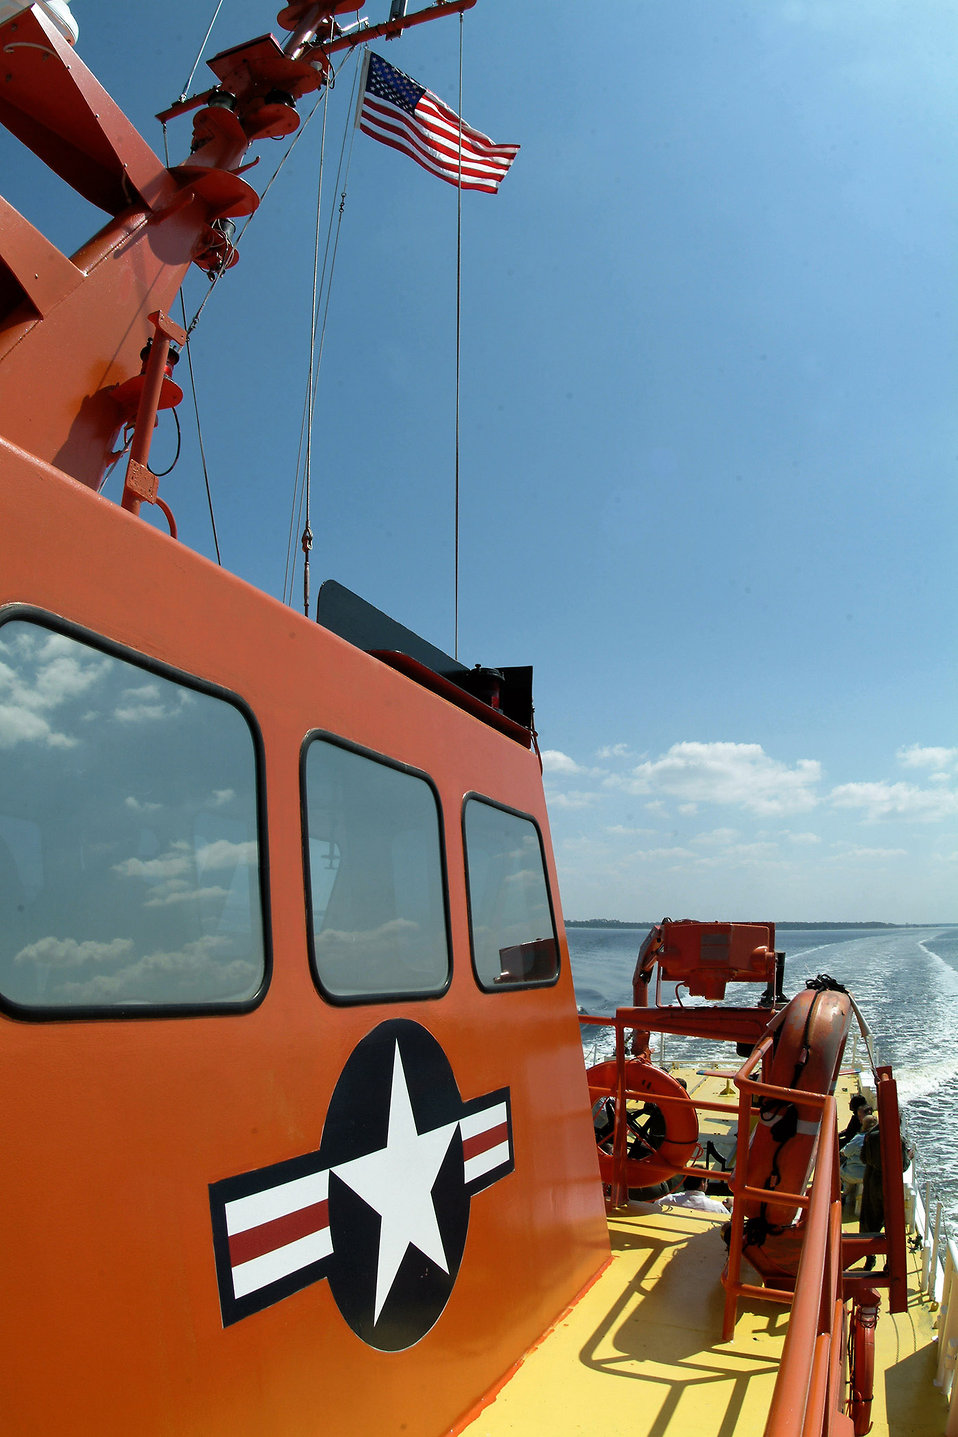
Air Force's navy

The 120-foot Air Force-owned missile retriever cruises through the Gulf of Mexico back to the docks March 26 at Tyndall Air Force Base, Fla. The ship is one of a small fleet used to recover sub-scale drones such as the BQM-167 after live fire exercises over the gulf. The ships recover approximately 100 of the $500,000 drones each year. The contracted fleet is part of the 82nd Aerial Targets Squadron.